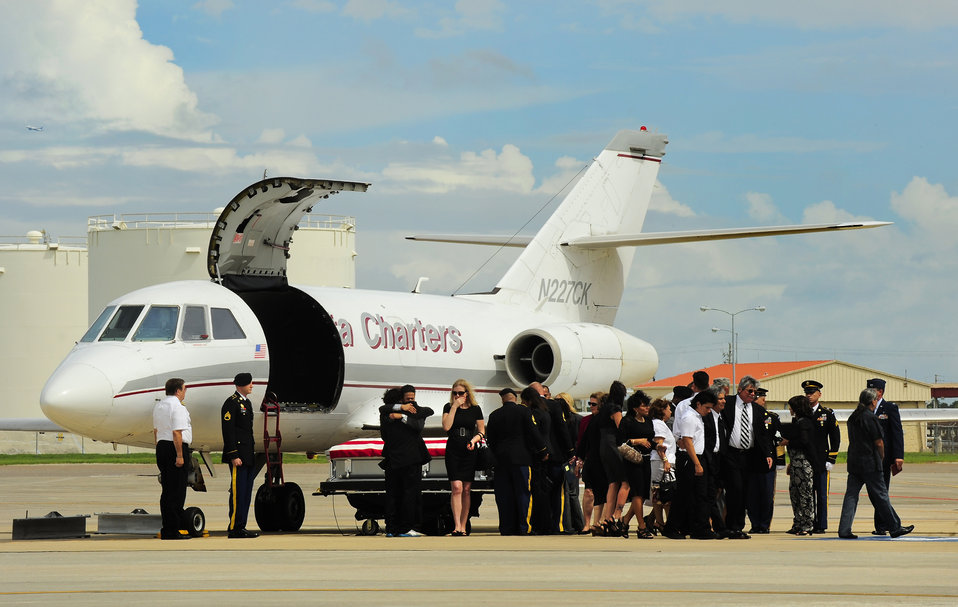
Fallen Heroes

Army Staff Sgt. Ricardo Seija’s family mourn him upon viewing his casket for the first time July 17, 2012, on the flightline of MacDill Air Force Base, Fla. Seija died July 8, of wounds suffered from an improvised explosive device when enemy forces attacked his unit in Maidan Shahr, Wardak province, Afghanistan.